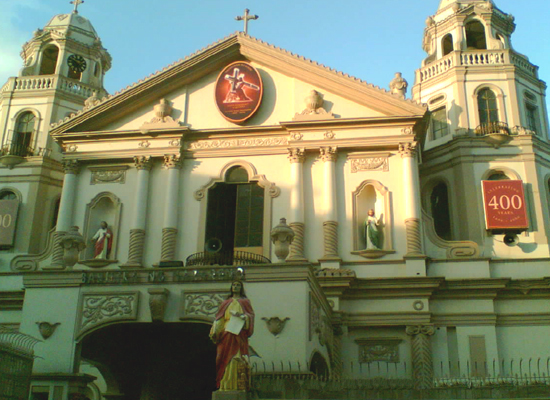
Facade of Quiapo Church - Taken on 9 Nov 2006 by Dean M. Bernardo, released for public domain use for Wikipedia